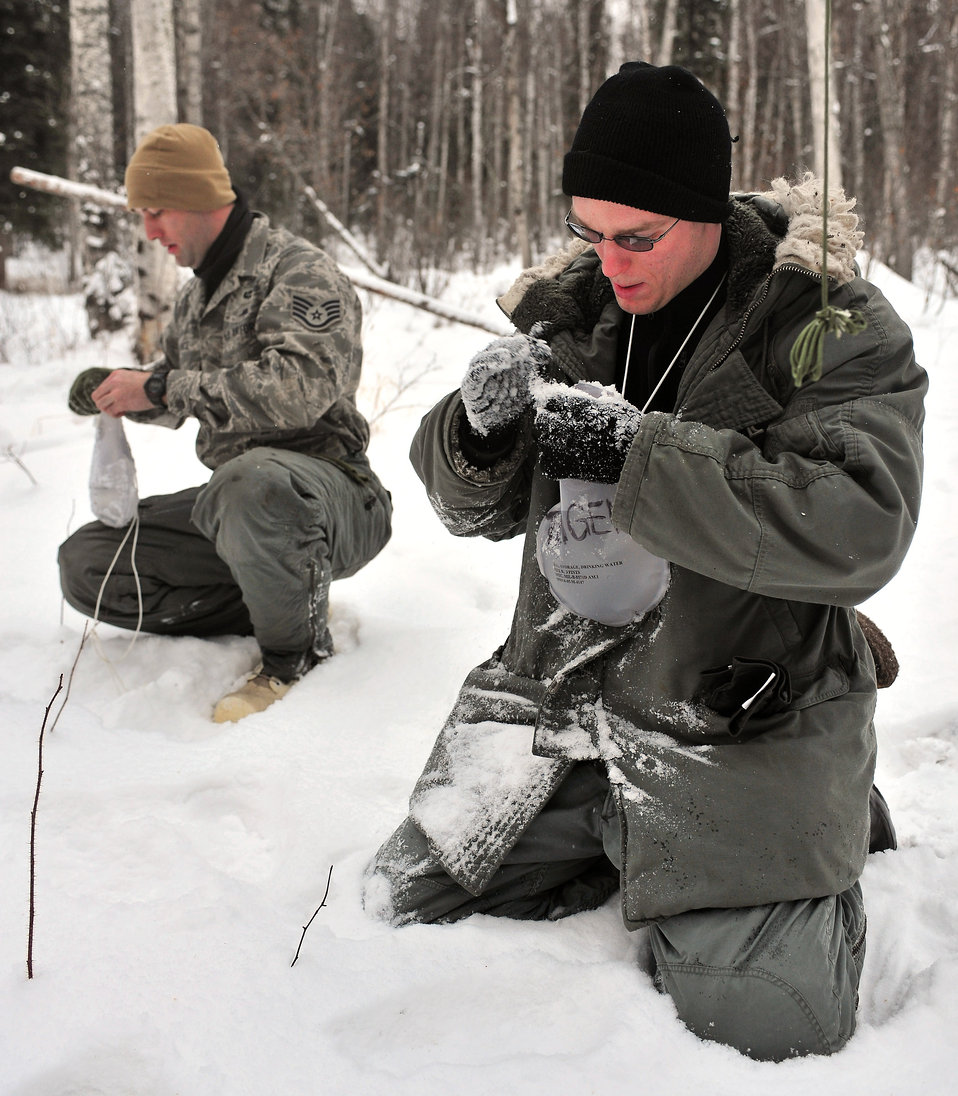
Learning survival skills in 'Cool School'

Airmen attending Arctic Survival School fill their water bottles with snow Feb. 25 at Eielson Air Force Base, Alaska. Body heat will melt the snow, providing a perpetual water source.